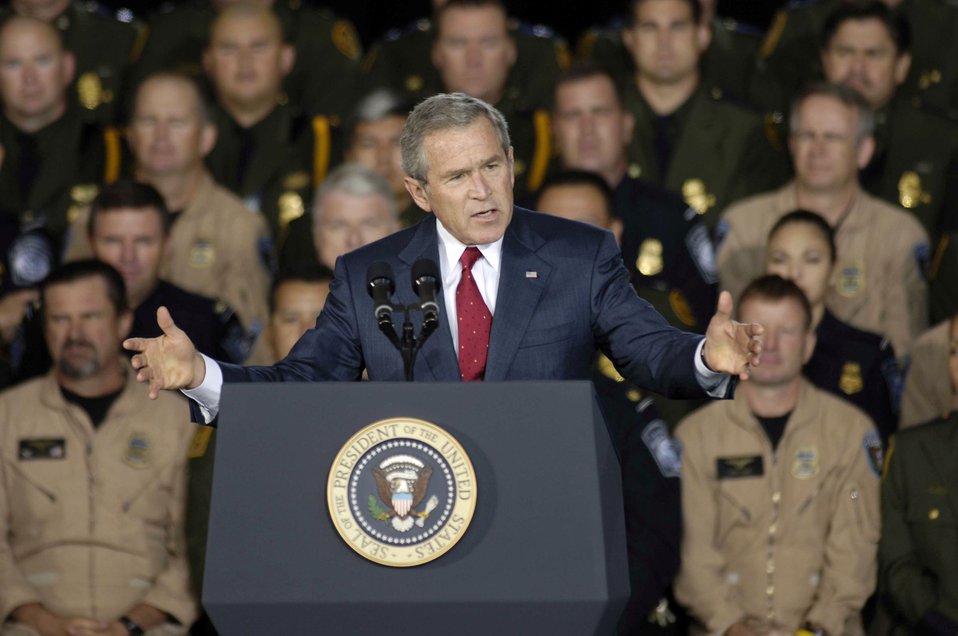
Bush visits Arizona

DAVIS-MONTHAN AIR FORCE BASE, Ariz. (AFPN) -- President George W. Bush speaks at a U.S. Border Patrol hanger. President Bush came to speak about current border patrol issues and immigration laws and policies.